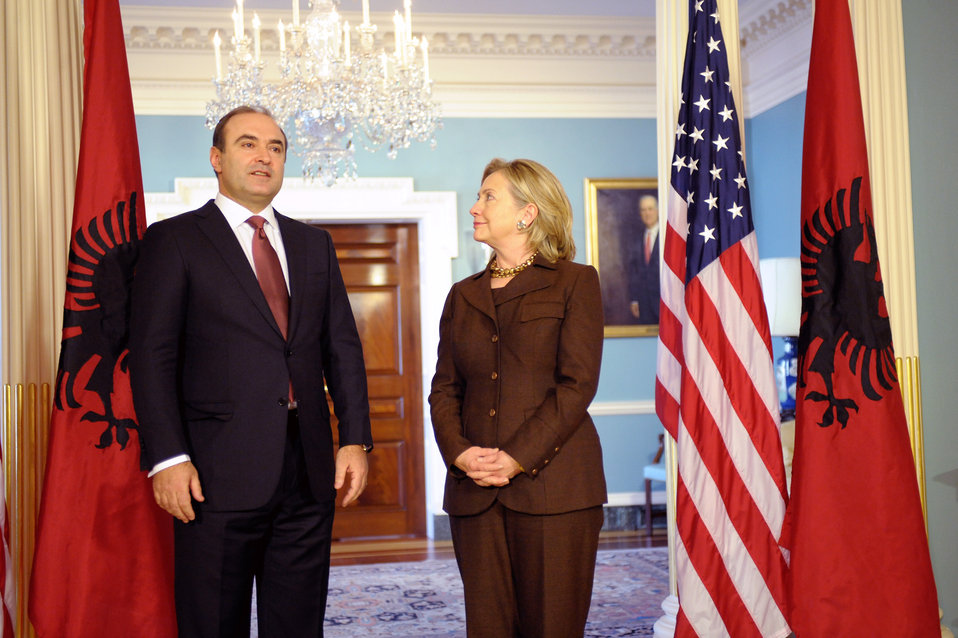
Secretary Clinton Meets With Albanian Foreign Minister Haxhinasto

U.S. Secretary of State Hillary Rodham Clinton meets with Albanian Foreign Minister Edmond Haxhinasto at the U.S. Department of State in Washington, D.C., on December 9, 2010.